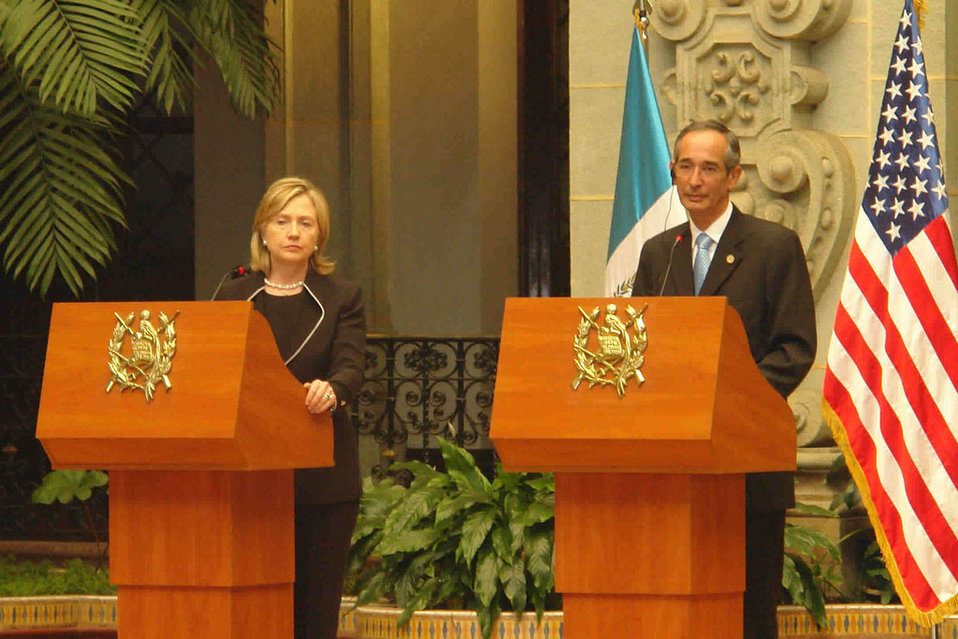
Secretary Clinton With Guatemalan President Alvaro Calom

U.S. Secretary of State Hillary Rodham Clinton listens to a question from the audience during a press conference with Guatemalan President Alvaro Calom at the National Palace of Culture, Guatemala City, Guatemala March 5, 2010.